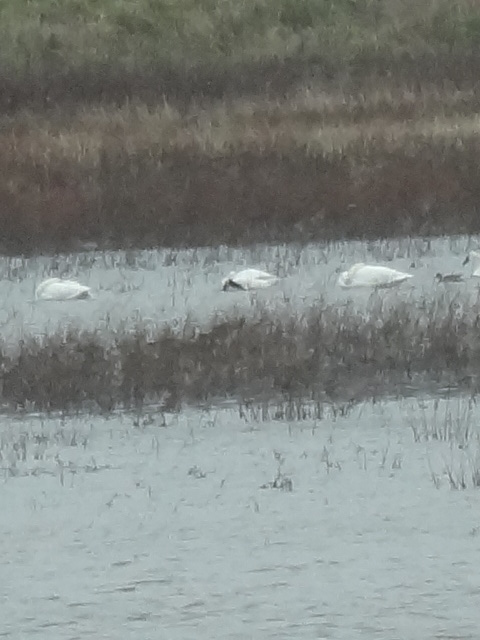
Trumpeter Swans on Marais des Cygnes State Area, Kansas

'Marais des Cygnes' is French for 'Marsh of the swans.' These Trumpeter Swans were spotted on state land on the western boundary of the Refuge.